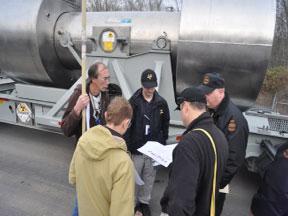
DOE and State Agencies Work Together

Cooperation between the Department of Energy, the Tennessee Highway Patrol and Tennessee Emergency Management Agency allows for a thorough safety inspection of trucks shipping Remote-Handled Transuranic Waste from Oak Ridge to the Waste Isolation Pilot Plant near Carlsbad, New Mexico.